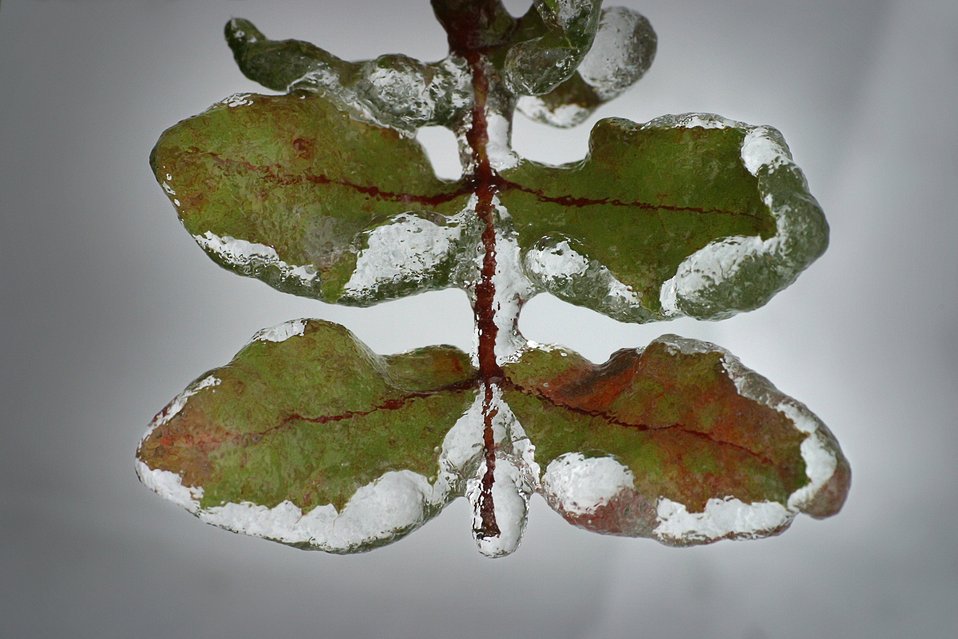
Ice on Oregon Grape leaves.